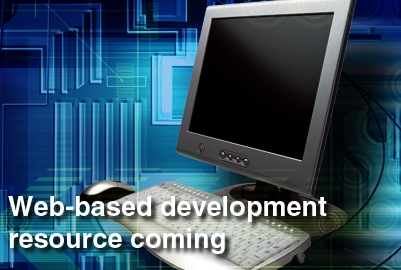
Web-based development resources coming

Airmen will soon have a new, Web-based tool to track their career and work with a mentor from throughout the Air Force, according to Dan Sitterly, the director of Force Development, deputy chief of staff for Manpower, Personnel and Services.